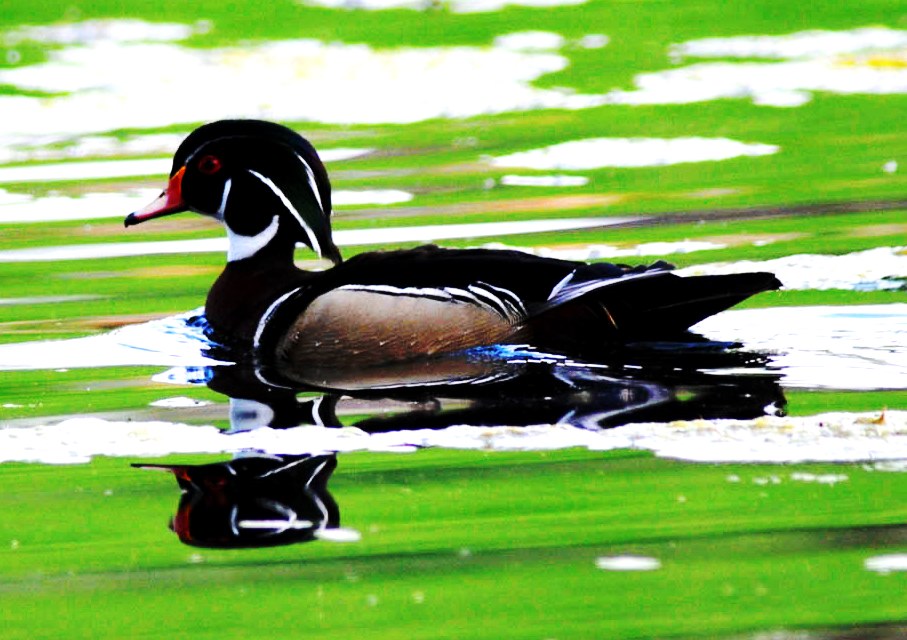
Wood Duck 2